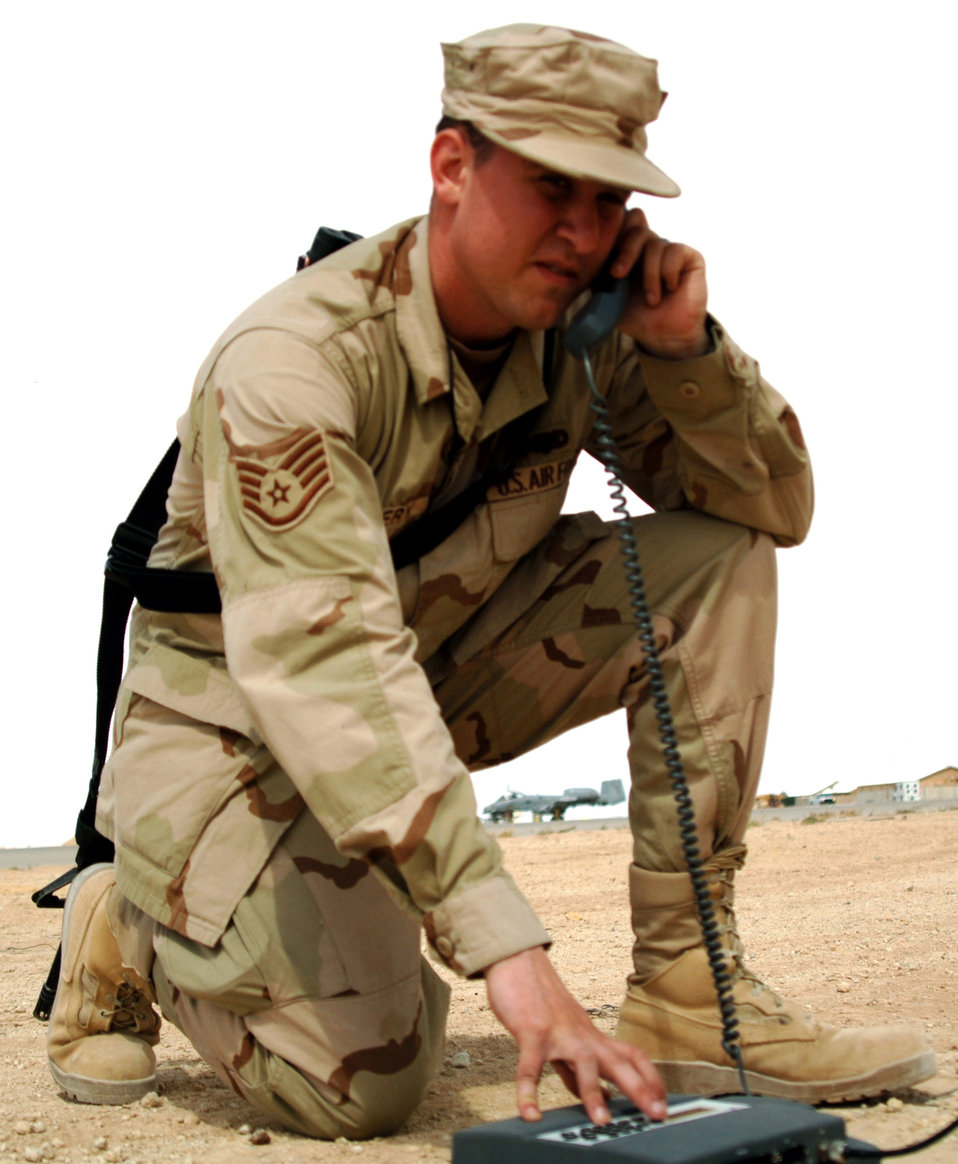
Communications Airmen make the connection

Staff Sgt. Sean Mallery operates an international maritime satellite phone while one of the group's A-10 Thunderbolt IIs is preflighted in the background before a combat mission over Al Anbar Province. He deployed from the 47th Communications Squadron at Laughlin AFB, Texas, and is assigned to the 438th Air Expeditionary Group at Al Asad Air Base, Iraq.